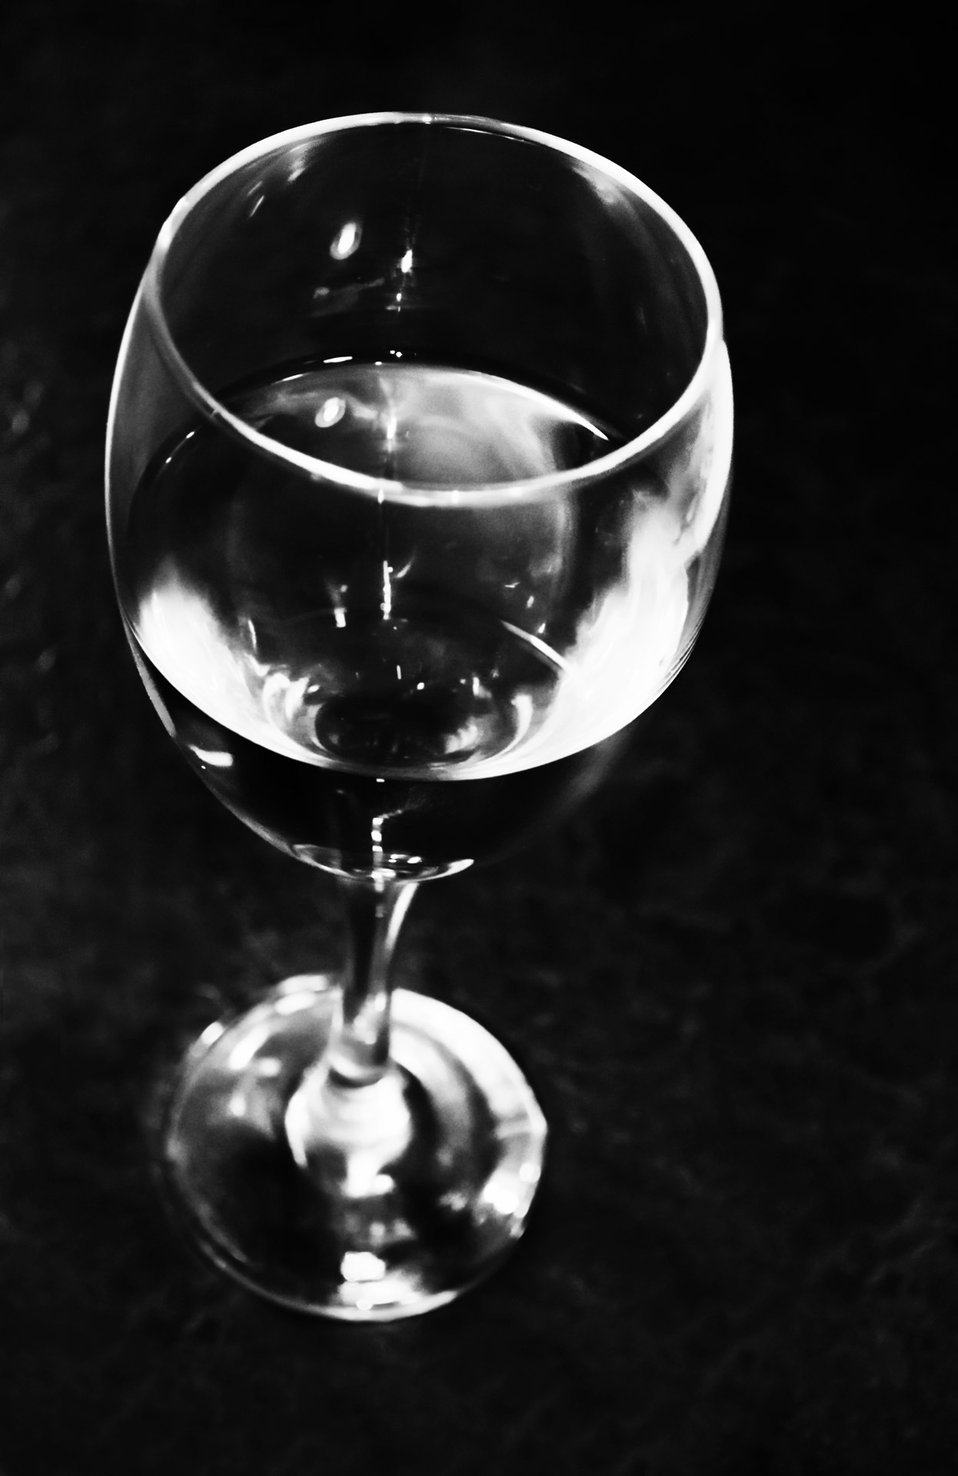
Glasses of wine.